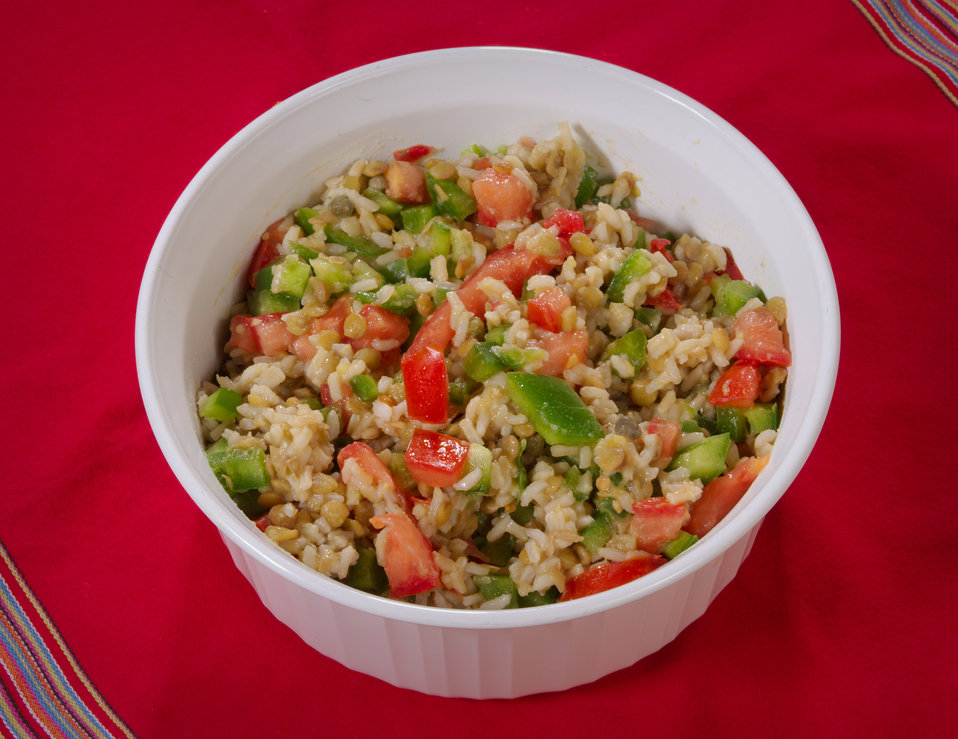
Loaded with vitamins A and C, and high in dietary fiber and protein, this nutrient-dense dish is called saucy lentil salad, and call for red and green bell peppers, lentils, brown rice, onion, and celery. Using only fat-free salad dressing as your seasoning, this is a simple healthy choice in either a side dish, or a meal in itself.